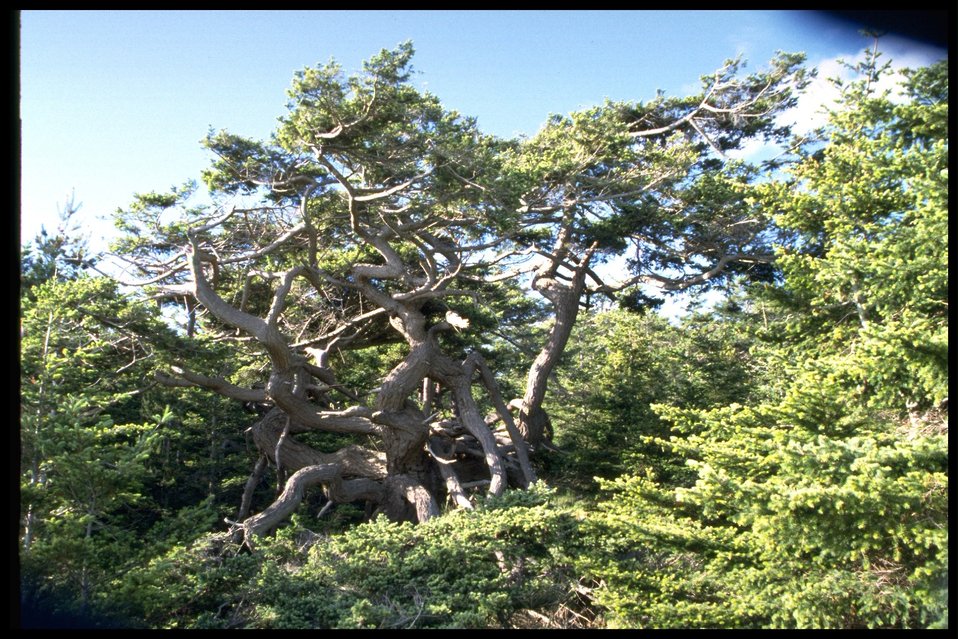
Windswept narly tree at Point Colville.